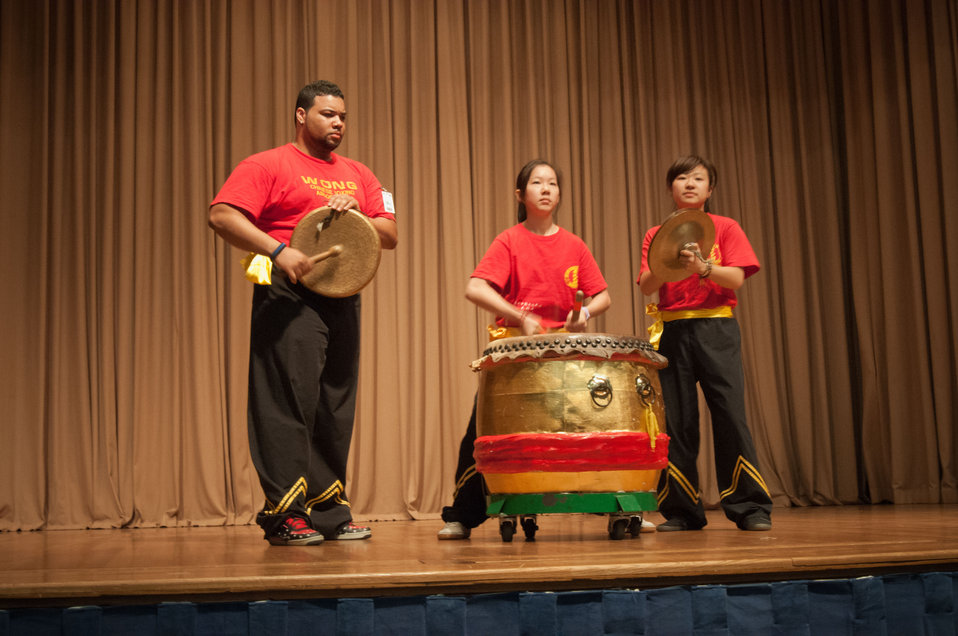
The Wong People Studio, The Ancient Chinese Dragon Dance Group performed the Dragon dance at the 2012 Asian Pacific American Heritage Observance “Striving for Excellence in Leadership, Diversity and Inclusion” at the U.S. Department of Agriculture in Washington, D.C. on Thursday, May 24, 2012. The Dragon dance is an ancient ritual based on Taoist Principles used to drive away evil spirits or bad energy (chi). The costume worn while performing this ritual is specifically designed for the purpose of driving away evil. The music for the Dragon Ritual is also an integral element of this energy directing ritual. A Dragon Ritual is successful when the Dragon, musicians and spectators synchronize their flow of internal energy (chi) to drive away the bad energy.